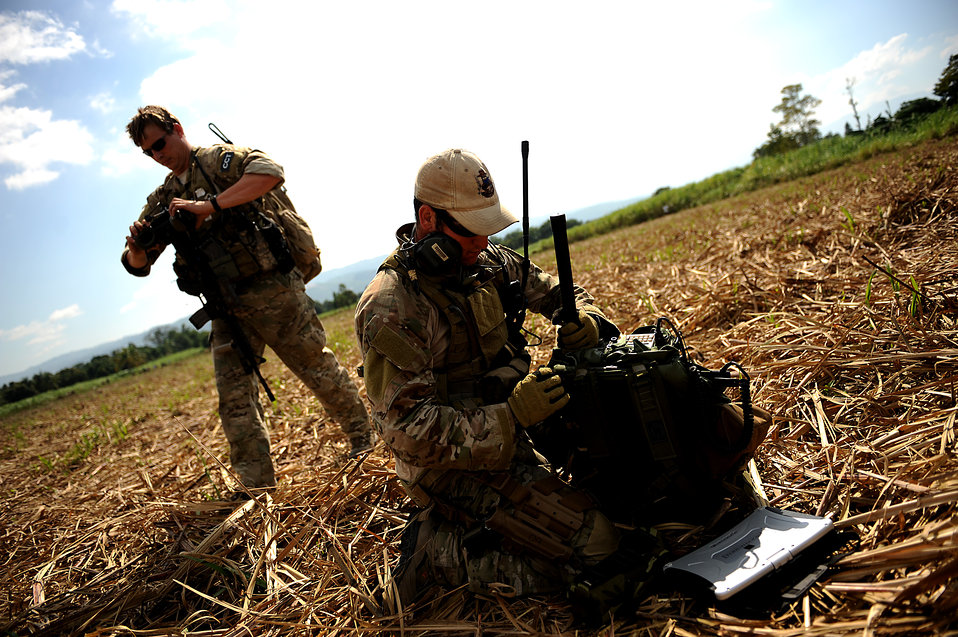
Joint team conducts drop zone survey

U.S. Air Force combat controllers set up communications to contact the special tactics operation center while conducting a drop zone survey in Port-au-Prince, Haiti, Jan. 24, 2010, during Operation Unified Response.